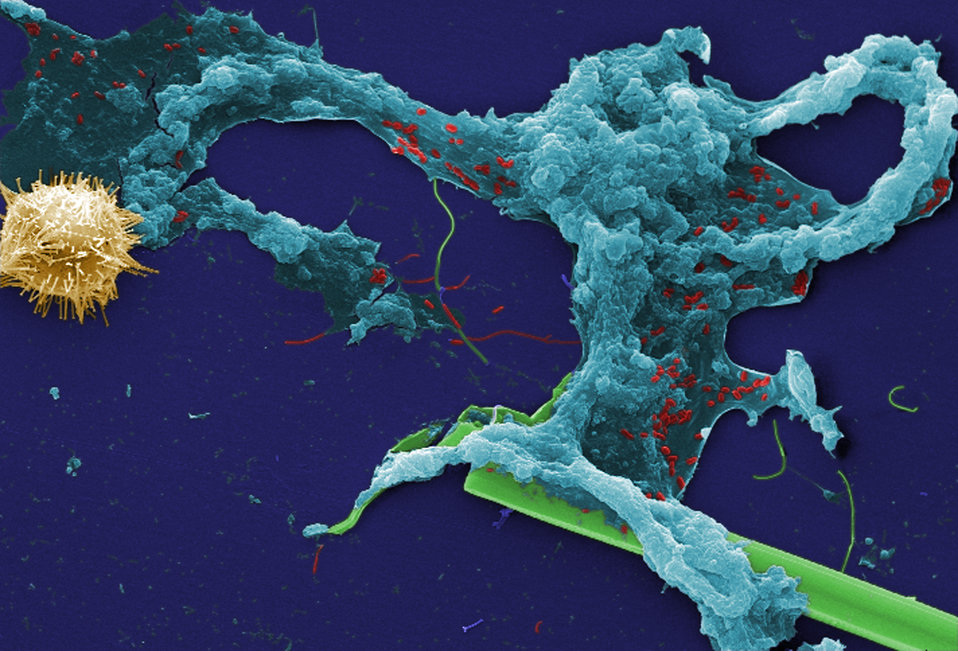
This digitally-colorized scanning electron micrograph (SEM) of an untreated water specimen extracted from a wild stream mainly used to control flooding during inclement weather, revealed the presence of unidentified organisms, which included bacteria, protozoa, and algae. Occupying most of the field of view, an unidentified amorphous mucoidal biofilm was featured, which appeared to have enmeshed numbers of amoeboid organisms, while on the right was a strangely-beautiful microorganism displaying an outer surface studded with numerous projections, making it appear like a microscopic sea urchin.